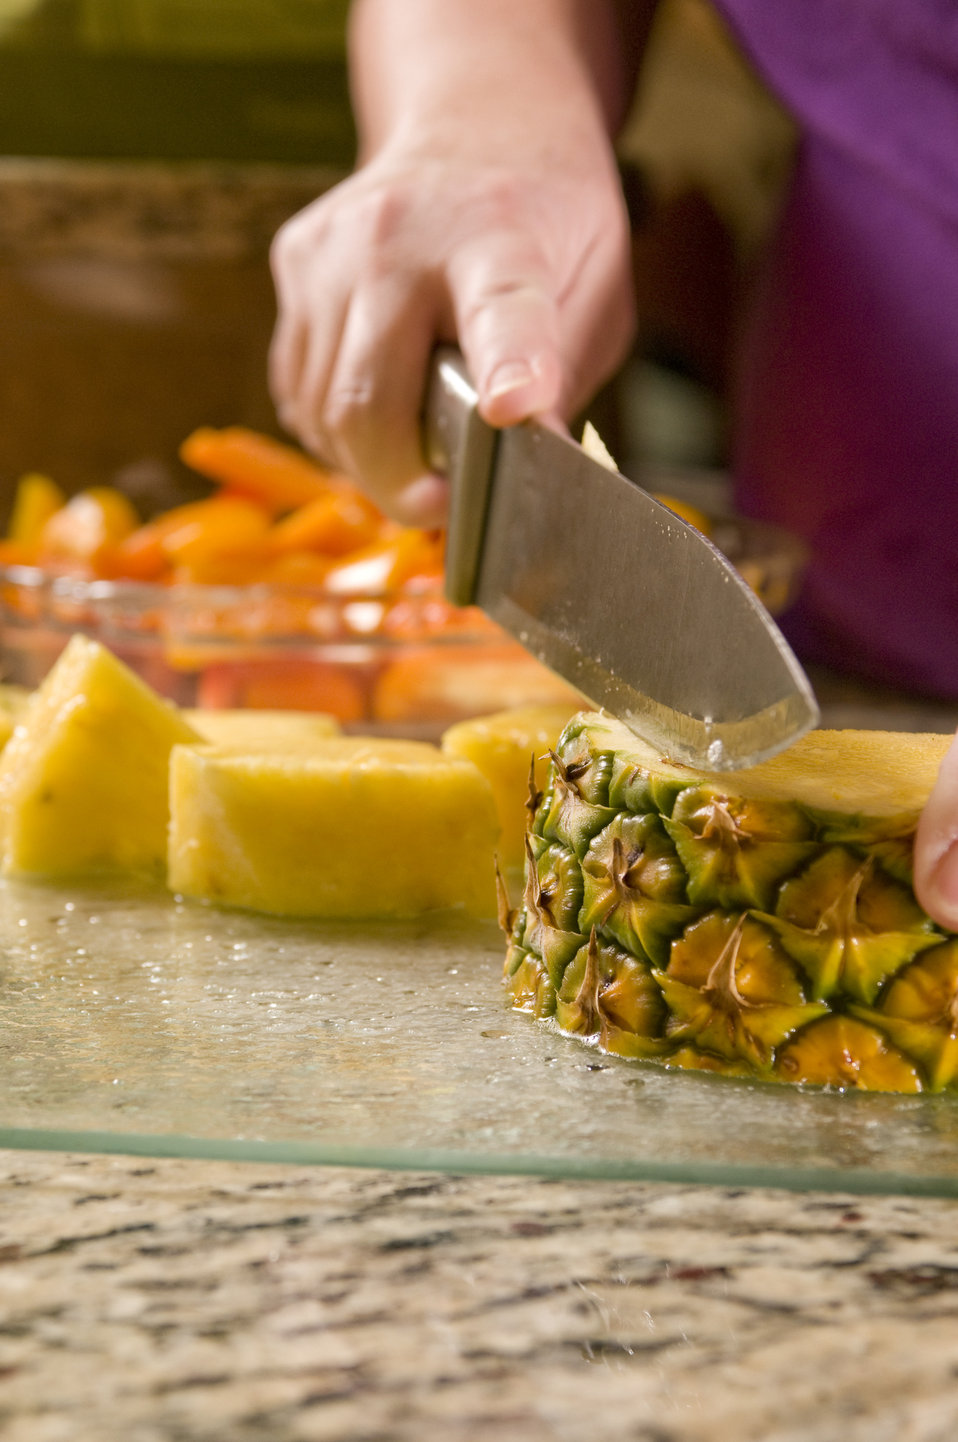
Here we see a woman in a kitchen setting photographed in the process of slicing a freshly cleaned, whole pineapple atop a clean glass cutting board, removing its horny, thoroughly-washed exterior. In the background, you can see a bowl of washed baby carrots. It is very important to prepare foods in as clean environment as possible, thereby, minimizing the possibility of introducing foodborne contaminants into the food preparation process.